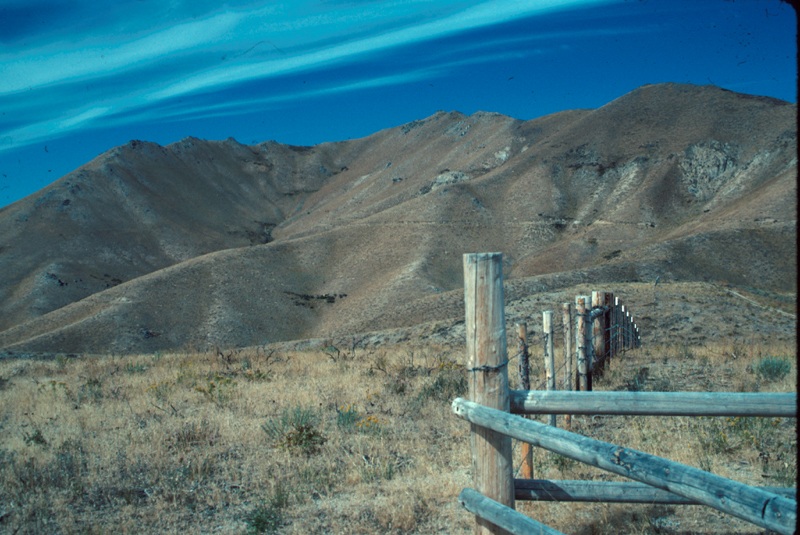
Range Restoration Project Lower Snake River District